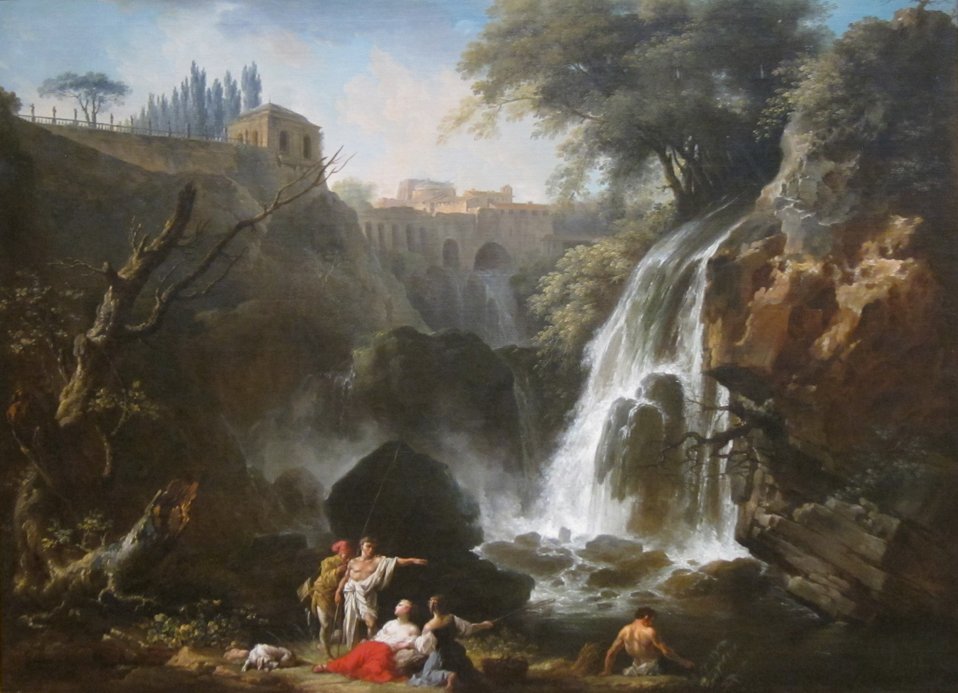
'The Cascades of Tivoli' by Claude-Joseph Vernet, Dayton Art Institute